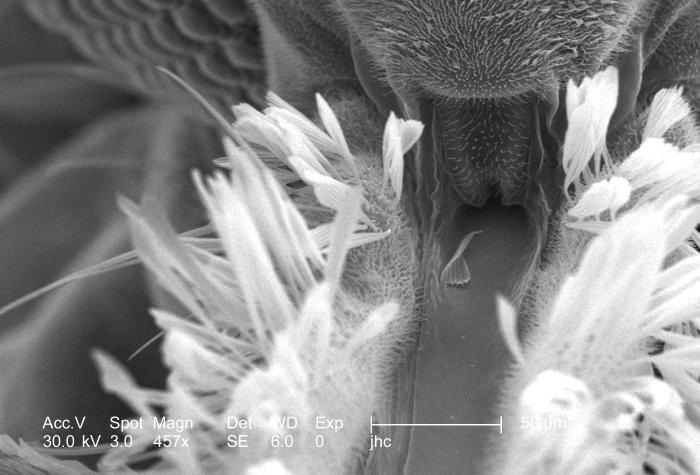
Magnified 457x, double that of PHIL 8782, this scanning electron micrograph (SEM) revealed some of the morphologic features displayed on the exoskeletal surface of an Anopheles gambiae mosquito's anterior head region. Included in this field of view was the proboscis, and two maxillary palps, the clypeus, to which the aforementioned structures are attached, and two bilateral multifaceted compound eyes. What is important in this particular view is the configuration of the "mouth", from which emanates the "labrum", which is the larger of the two sharp stylets that are used to penetrate the skin of the host when obtaining a blood meal. The labrum is a trough-like structure that guides blood up the proboscis, and into the insect's mouth.